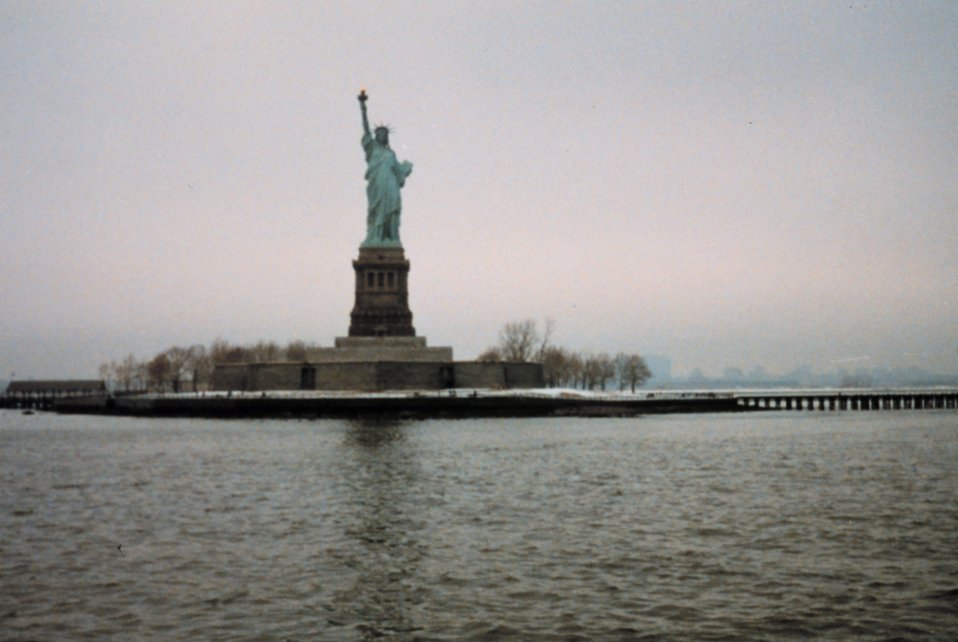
The Statue of Liberty, New York Harbor